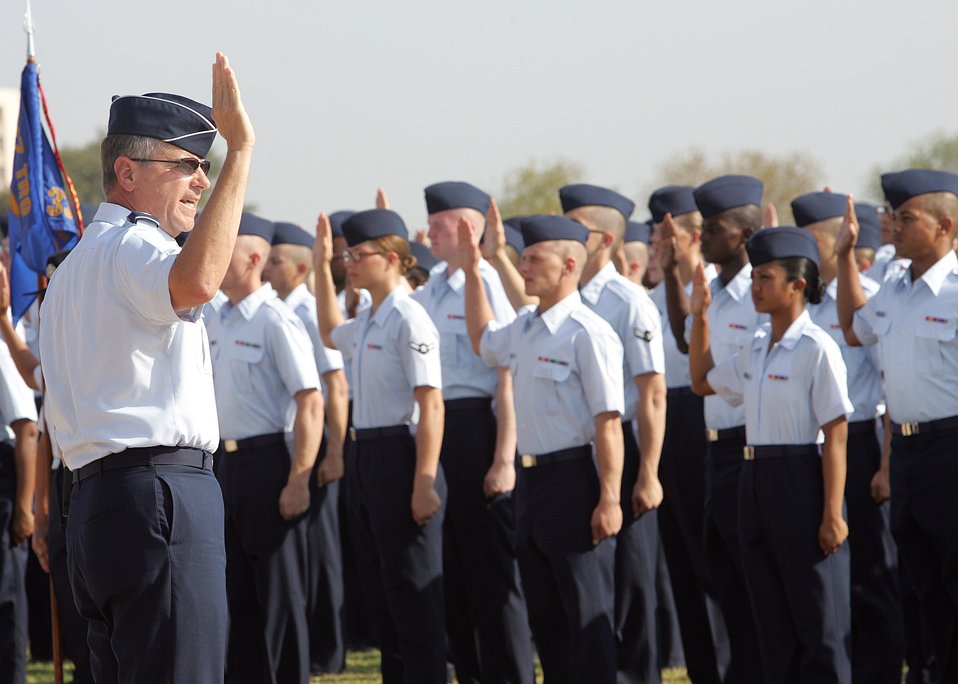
AFPC commander newest Prep School Exemplar

Maj. Gen. Tony Przybyslawski was recently selected by the Air Force Academy Preparatory School Class of 2007 as their exemplar. General Przybyslawski is the Air Force Personnel Center commander.